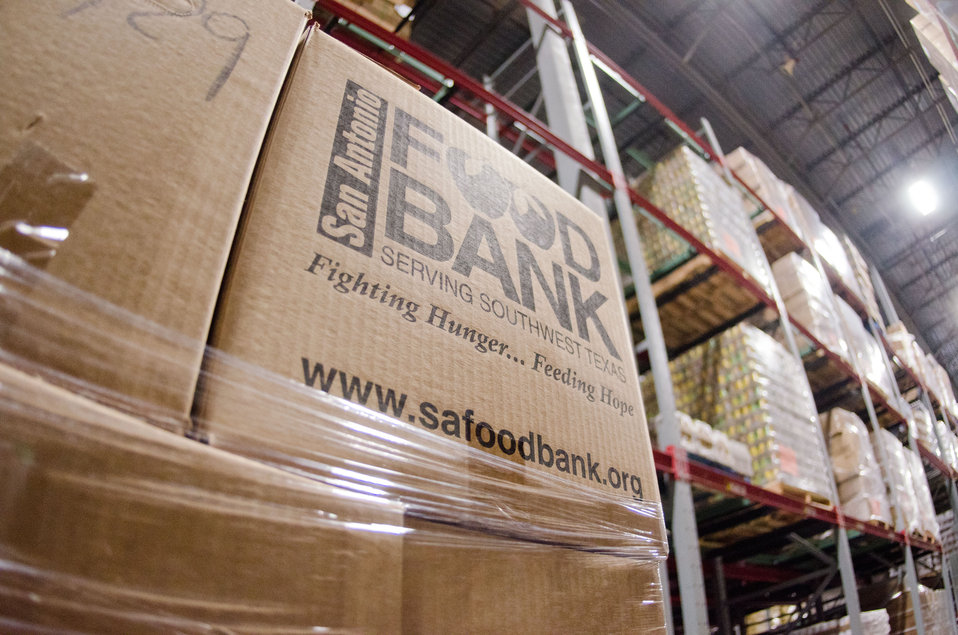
The United States Department of Agriculture donates commodities through programs such as The Emergency Food Assistance Program (TEFAP), which the San Antonio Food Bank (SAFB) packages and palletizes them for fast distribution from its San Antonio, TX., headquarters, on Monday, October 31, 2011. SAFB is a non-profit organization that serves as a clearinghouse by receiving and storing truckloads of donated food, produce, and other grocery products, they then distributes these items to over 500 service agencies that help people in need.
“We couldn’t do what we do without our partnership with USDA’” said President and CEO Eric Cooper. He continues, “We are privileged in partnering (with the USDA) to feeding kids, through the summer, with the Summer Food Service Program, and throughout the year, with the Child and Adult Care Feeding Program (CACFP). Then in our approach to feeding seniors, we partner with USDA in the Commodities Supplemental Food Program (CSFP), and the Senior Farmer’s Market (Nutrition) Program. And then work to bring all our (needy) parties together with our Supplemental Nutrition Assistance Program (SNAP) Outreach. You know, once families have access to food we believe it is important to educate them. Through the support of the SNAP-Education Program we are able to educate them during their time of need. With this comprehensive approach we are really able to get the right food, at the right amount, at the right time, to needy families throughout our community – which allows us to feed the fifty-eight thousand we do, each week.”
SAFB serves 16 counties in Southwest Texas and states, “Nearly one out of every four children and one out of every five adults in Southwest Texas lives in poverty and has difficulty meeting basic nutritional needs.” According to SAFB, sixty-five percent of the people requesting emergency food have children. “Additionally, the senior citizens and those living on a fixed income generally have limited funds for a consistent grocery budget.”
San Antonio is the seventh largest city in the nation with surrounding farms and ranches near its rivers and water supplies. When available they provide fresh surplus produce. Other commodities come from the food industry and manufacturers. The major food brand companies that for various reasons have surplus commodities donate it to SAFB.
Texas farmers supply fresh produce to their Fresh Produce Program.
Public donations come in the form of money, food, volunteer time, and advocacy.
Their fleet of trucks pickup and deliver food as needed.